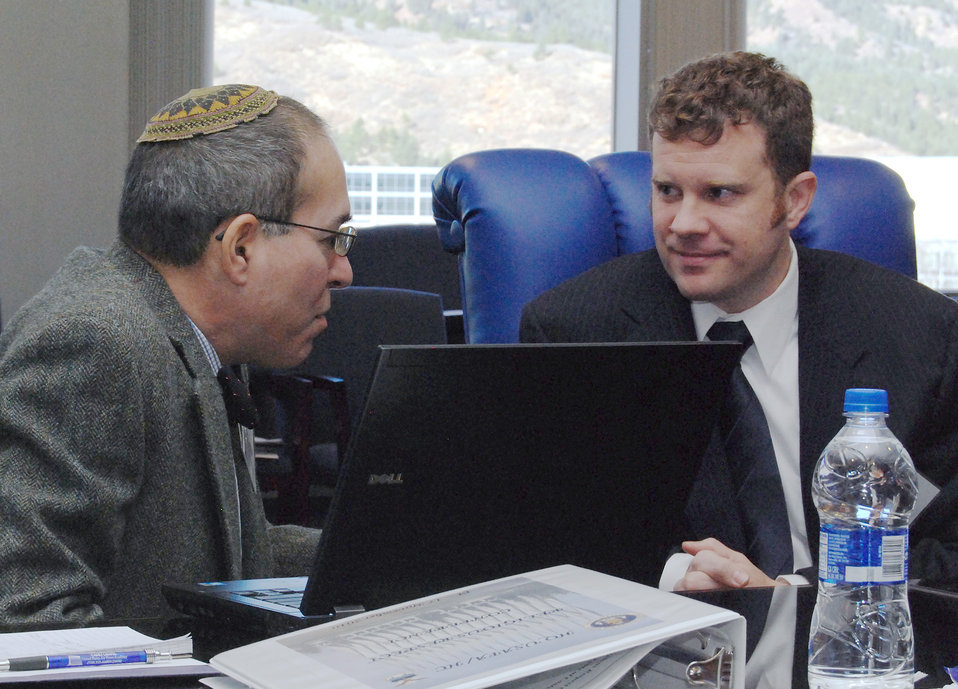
Religious respect conference

Rabbi Barry Baron and Jason Torpy talk during a break at the 2010 Religious Respect Conference Nov. 16, 2010, at the Air Force Academy, Colo. Conference topics included how to define religious respect and the roles of both commanders and chaplains in accommodating requests for religious expression. Rabbi Baron is the deputy director of the Jewish Welfare Board Jewish Chaplains Council. Mr. Torpy is the president of the Military Association of Atheists and Freethinkers.